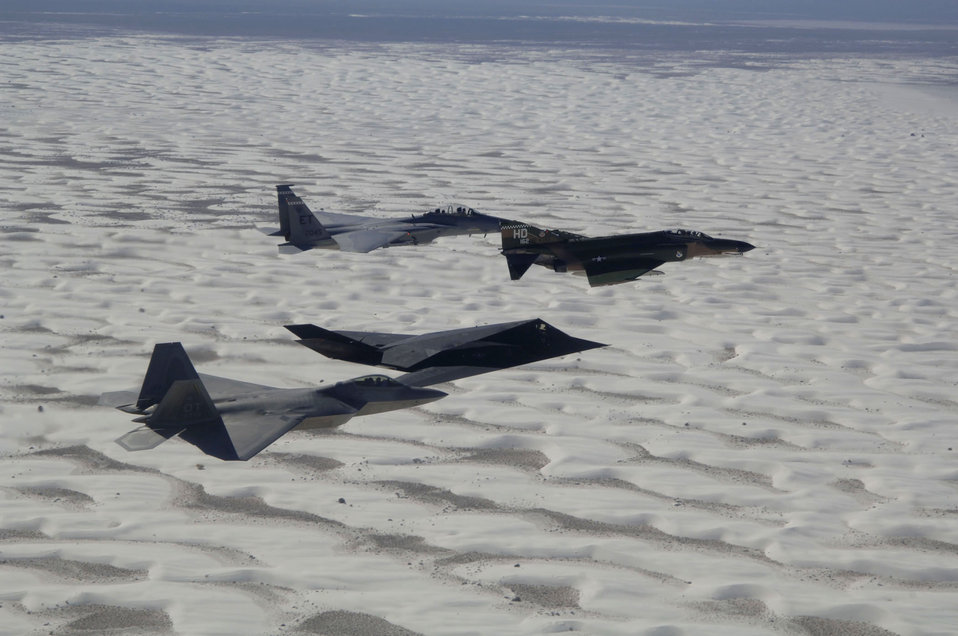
Holloman Air and Space Expo

An F-22 Raptor, an F-117 Nighthawk, an F-4 Phantom and an F-15 Eagle fly above the clouds over Holloman Air Force Base, N.M. Oct. 27 during the Holloman Air and Space Expo. The expo showcased Air Force capabilities and the 49th Fighter Wing.